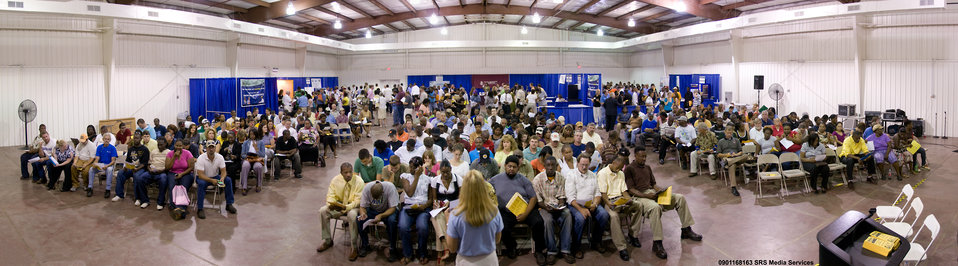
Annendale Job Fair

More than 1000 people attended the Allendale Job Fair that was hosted by the Savannah River Site. By late May, the Site received more than 12,500 resumes from eager job seekers.